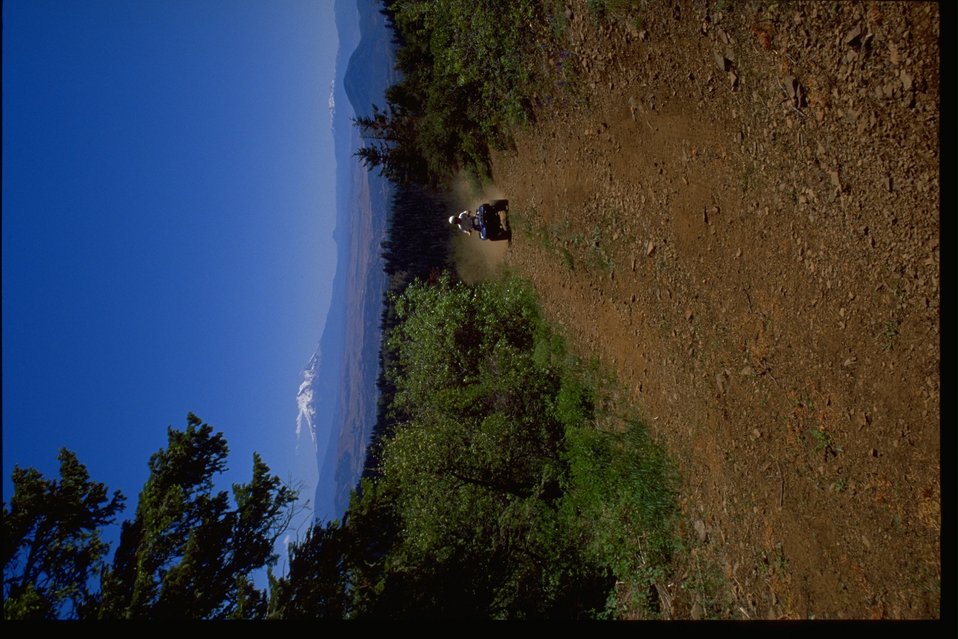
ATV rider on an off road vehicle.